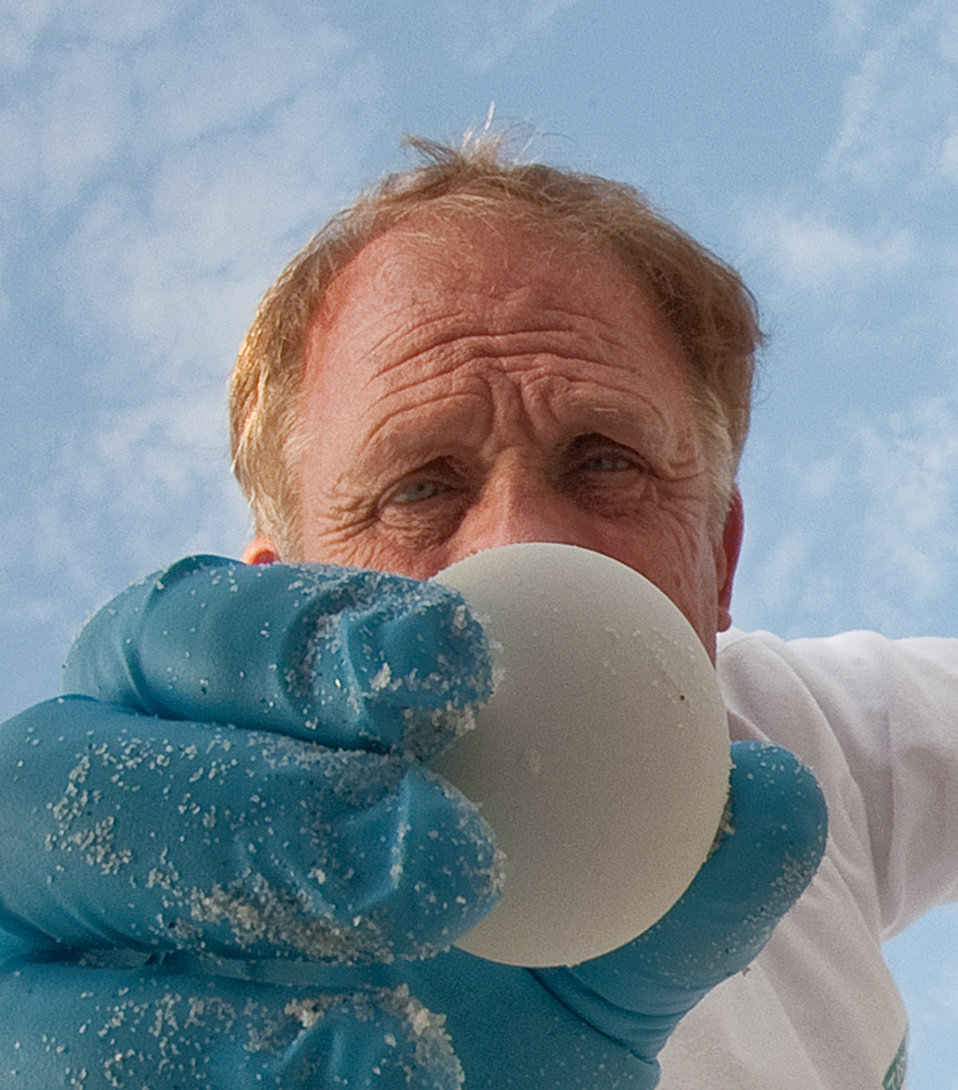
Turtle Eggs avoid Gulf Oil Danger

The honor of lifting the last of 112 Loggerhead sea turtle eggs went to Bob Miller, who carefully packing the eggs into Styrofoam coolers lined with the white sand at Eglin Air Force Base, Florida, on August 9, 2010. Mr. Miller is the Sea Turtle Program Manager with the 96th Civil Engineer Squadron. Because of the critical attachment of the embryo to the inside of the egg shell, the eggs must be gently lifted with out tilting or rotating, the egg. With equal care the transportation to the Atlantic coast is equally critical. At a controlled climate facility, they will be allowed to hatch in the cooler. Wildlife technicians will then release them into the ocean. Bob Miller, a retired Navy EOD diver, an endangered species biologist has for the past 10 years been the Sea Turtle program manager and primary permittee at Eglin Air Force Base, Fla. He has also served as the program manager for the Barrier Island and Gulf of Mexico, U.S. Fish and Wildlife Service, Endangered Species Act, Section 7 Consultation; Coastal Zone Management Act, Marine Mammal Protection Act, and Coastal Barrier Resources Act.